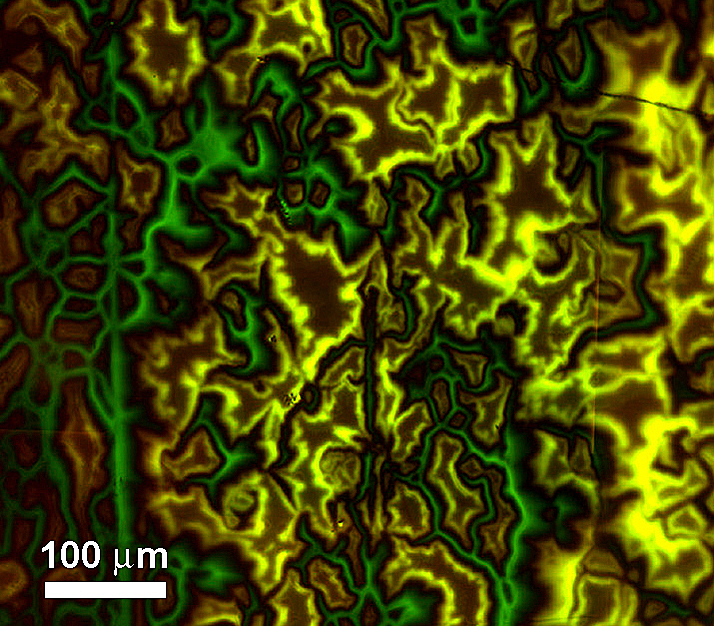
High-Temp Superconductors

Magneto-optical image of magnetic fields within a YBCO superconductor showing electrically connected grains (yellow) and grain boundaries (green) that form barriers to superconducting currents. The large reversible effect of strain observed by NIST might be due to associated changes in grain boundaries, which raise the barriers to current flow and lowering the material's current-carrying capability.

Credit: D.C. van der Laan/NIST and J. Schwartz, NHMFL-FSU